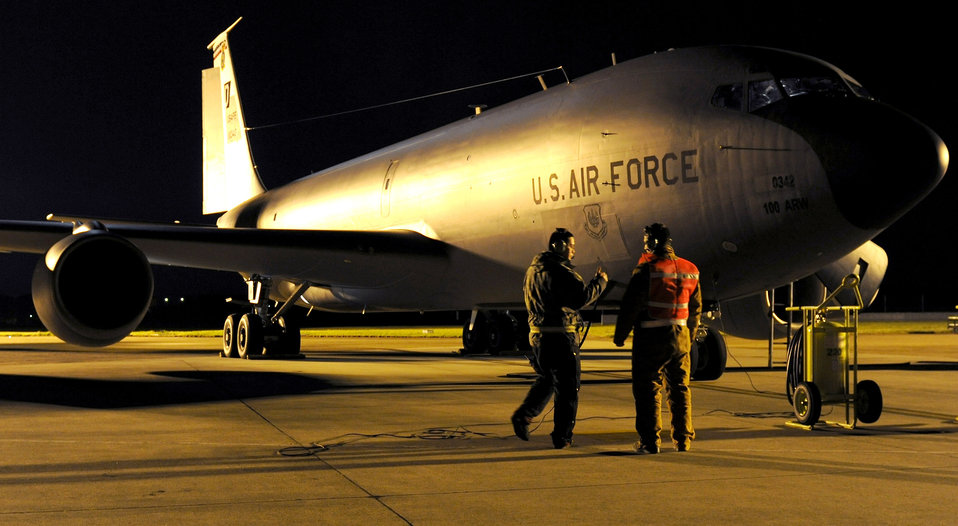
Joint Task Force Odyssey Dawn

110319-F-DE018-094 -- RAF MILDENHALL, England (March 19, 2011) -- Members of the 100th Air Refueling Wing Aircraft Maintenance Squadron prepare a KC-135 Stratotanker for a refueling mission in support of Joint Task Force Odyssey Dawn. JTF Odyssey Dawn is the U.S. Africa Command task force established to provide operational and tactical command and control of U.S. military forces supporting the international response to the unrest in Libya and enforcement of United Nations Security Council Resolution (UNSCR) 1973. UNSCR 1973 authorizes